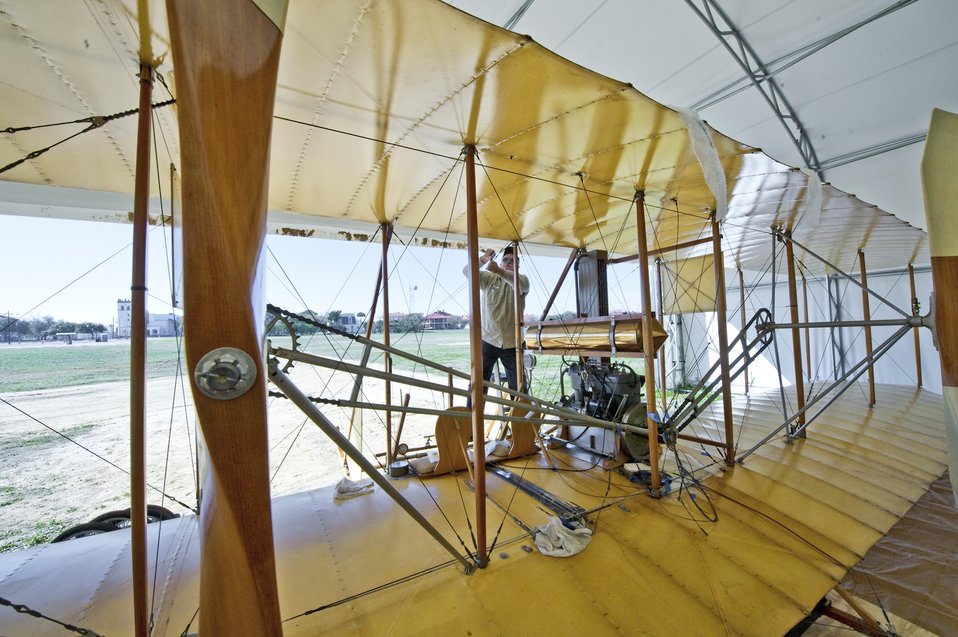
Wright

John Kennedy attaches structural cables of a Wright